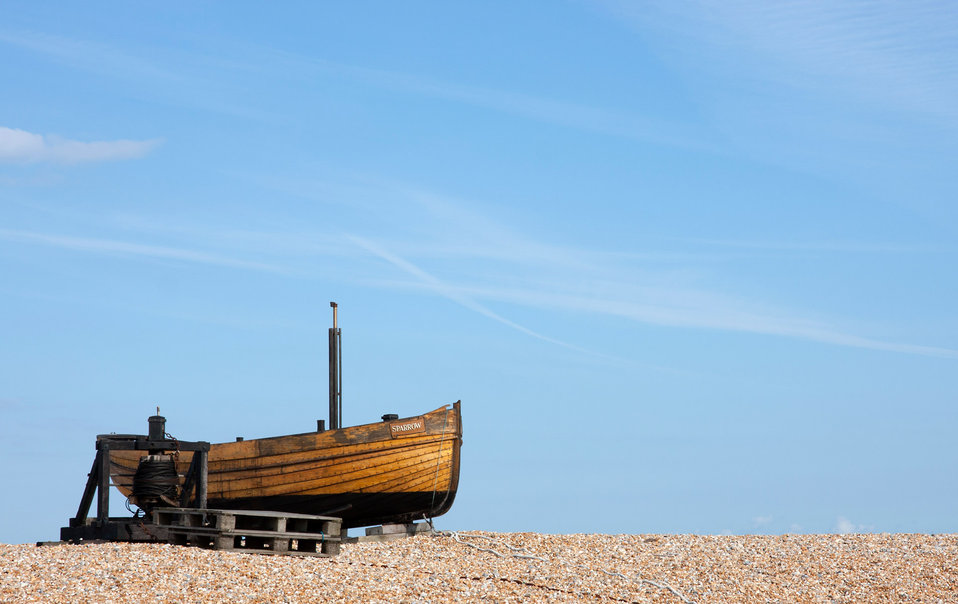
Wooden fishing boat

Beautiful wooden fishing boat against a blue skyline.